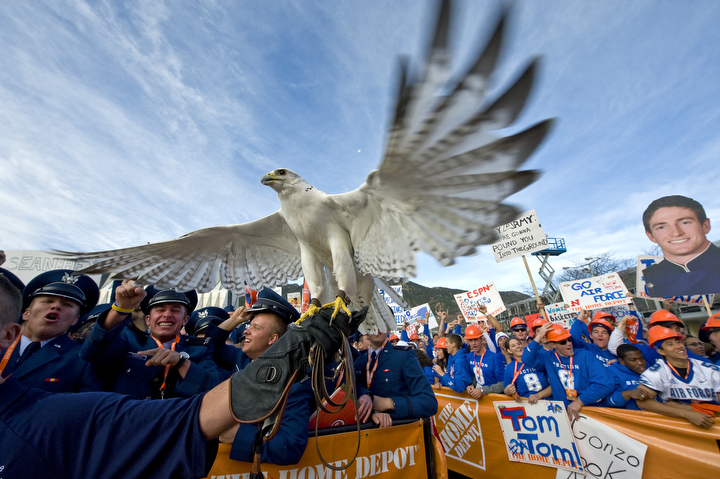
ESPN films 'College GameDay' from Academy

Aurora, a falcon mascot of the U.S. Air Force Academy, reacts to an F-16 Fighting Falcons fly-by during filming of ESPN's